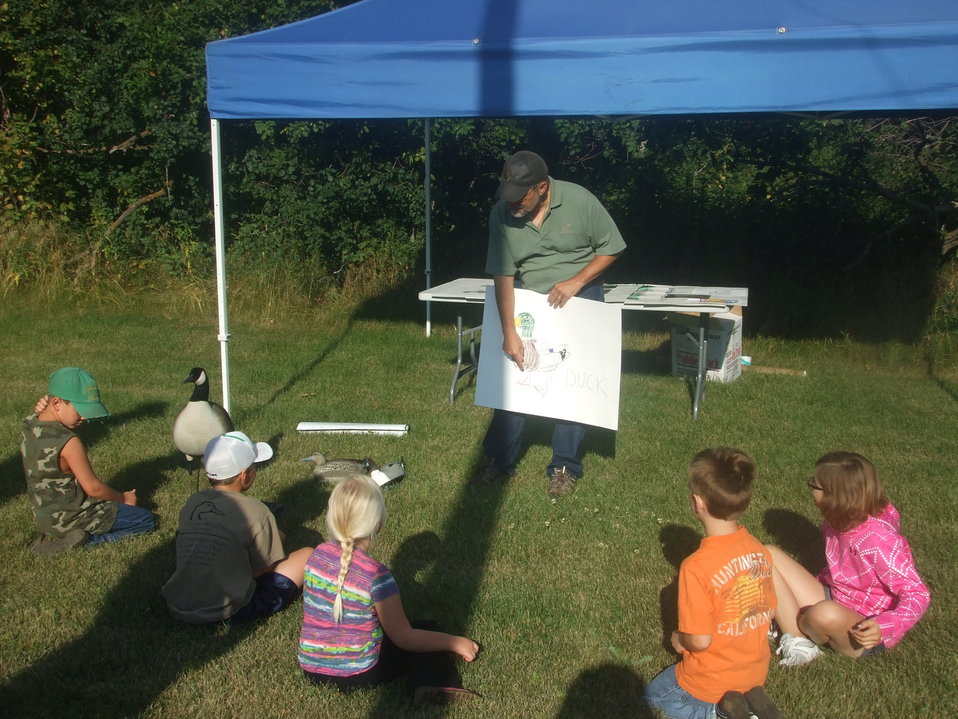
2011 Greenwing Day - Ducks Unlimited Waterfowl ID session

Des Lacs National Wildlife Refuge, Tasker's Coulee

'Dabbling' in waterfowl ID